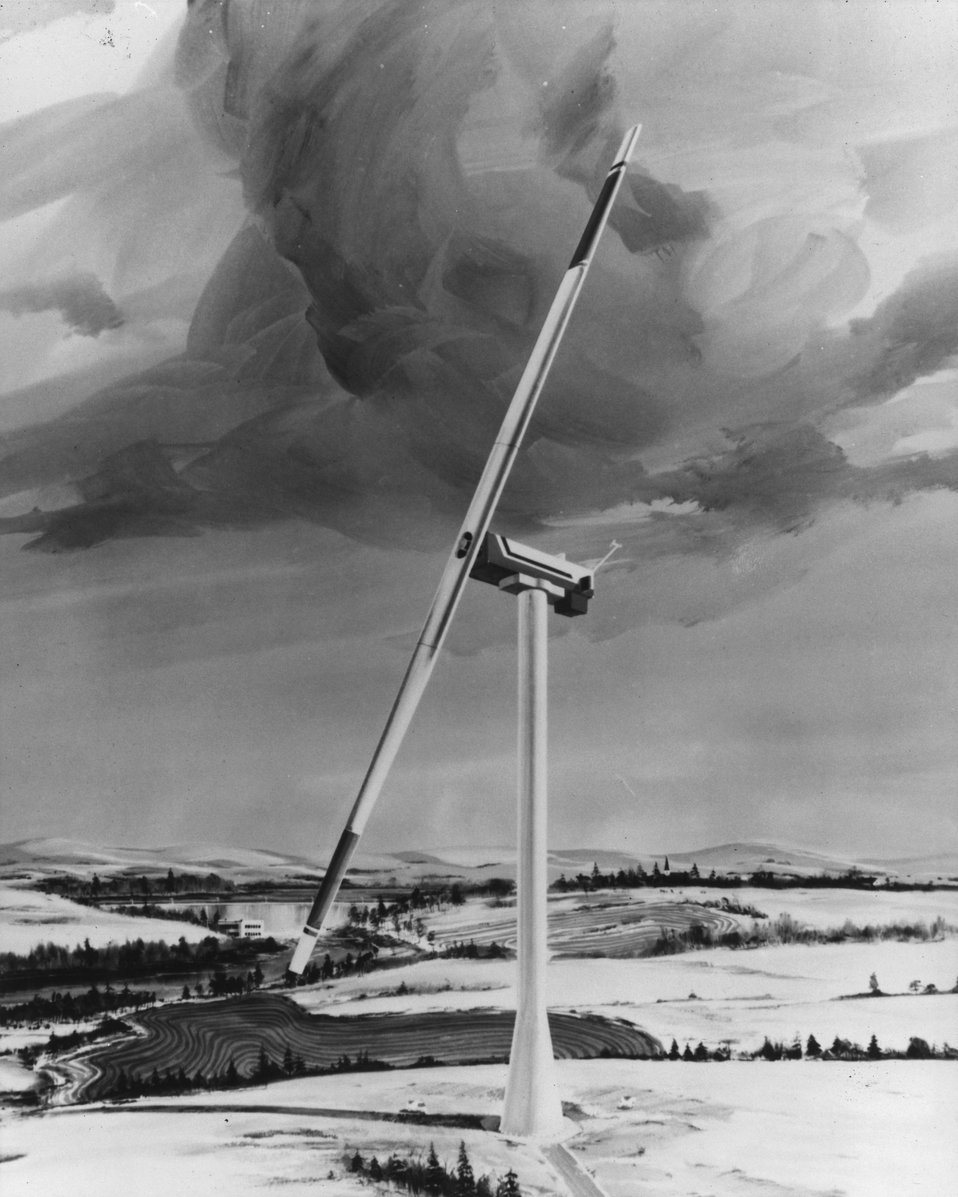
Artist's rendering of the 'largest windmill in history,' to be designed and built by Boeing Engineering and Construction for a test program conducted by the Department of Energy (DOE) and managed by the National Aeronautics and Space Administration (NASA). c. 1977